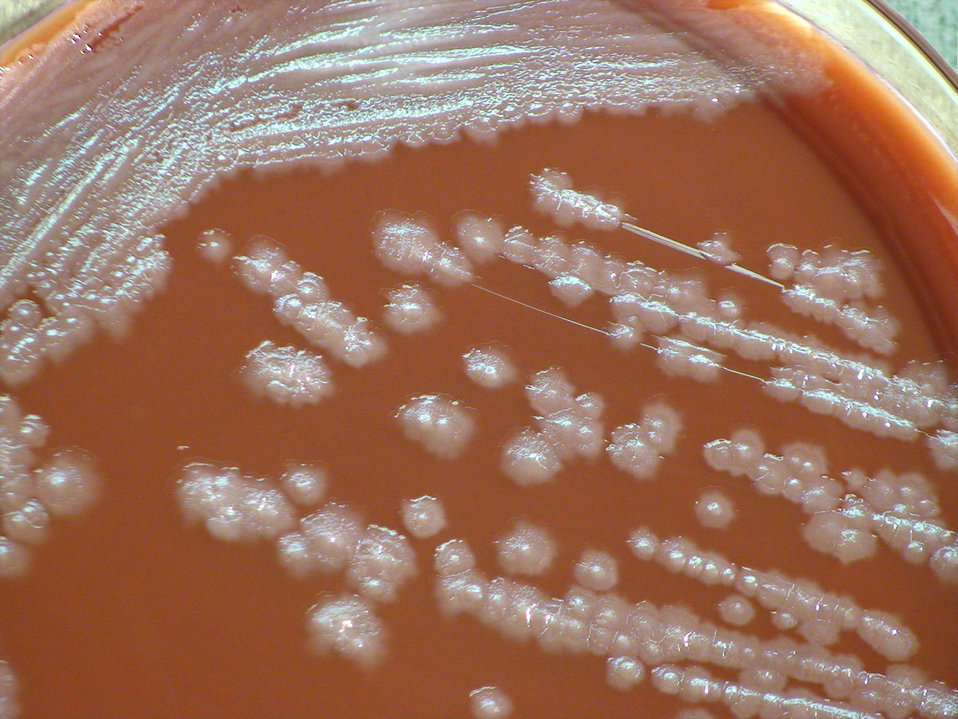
A closer view of PHIL 12403, this photograph depicts the colonial morphology displayed by Gram-negative Burkholderia thailandensis bacteria, which was grown on a medium of chocolate agar, for a 48 hour time period, at a temperature of 37�C. See both PHIL 12417 and 12418, for a view of this bacterial specie, grown on the same medium, at the same temperature, however, for a lesser amount of time (24hrs), and note PHIL 12425 and 12426, which depict the B. thailandensis colonial growth, again on the same medium, but at a higher temperature (42�C), and half the cultivation time (24hrs).